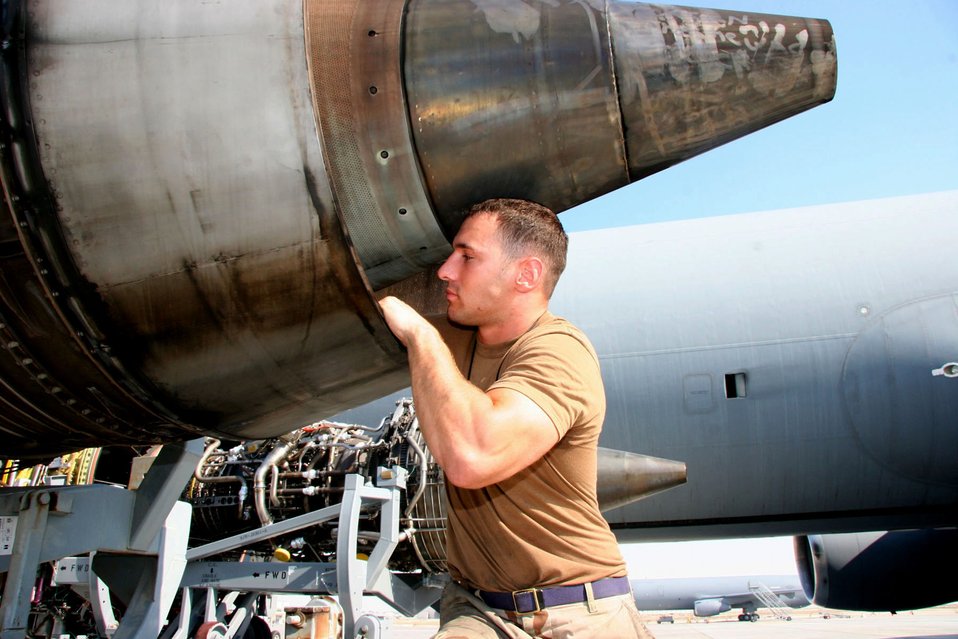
Desert KC-10 Engine Change

Staff Sgt. Jamie Sherwood inspects the turbine blades of a damaged engine removed from a KC-10 Extender Nov. 23 at a deployed air base in Southwest Asia. The engine will be sent to a depot where it will be overhauled and returned to the unit.